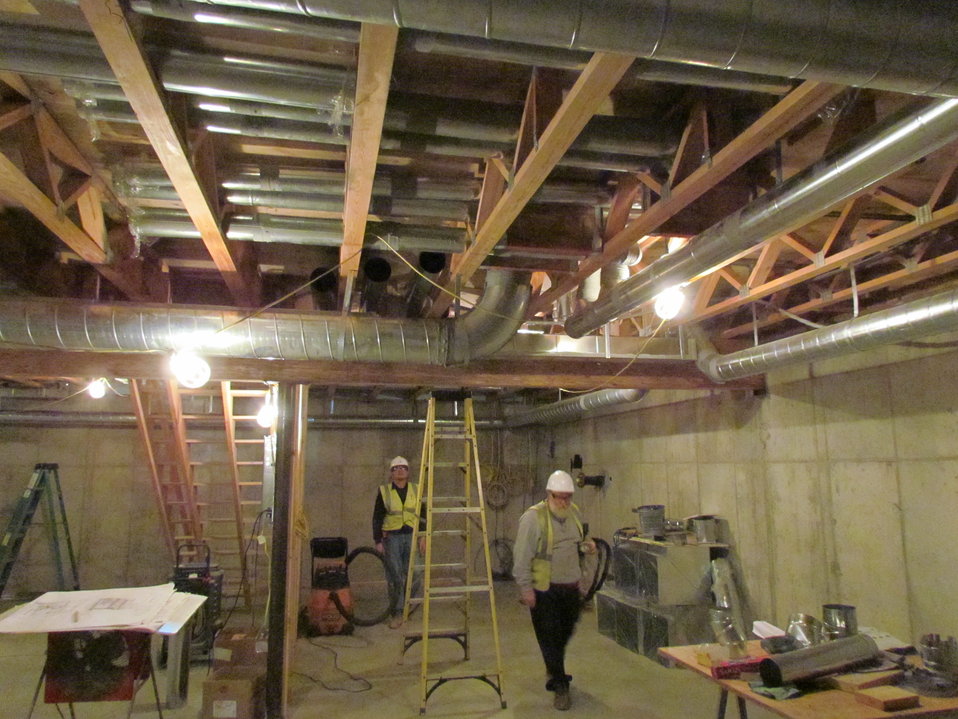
Net-Zero Energy Residential Test Facility - Picture showing installation of duct work within the facility. Picture taken looking into northwest corner of basement.